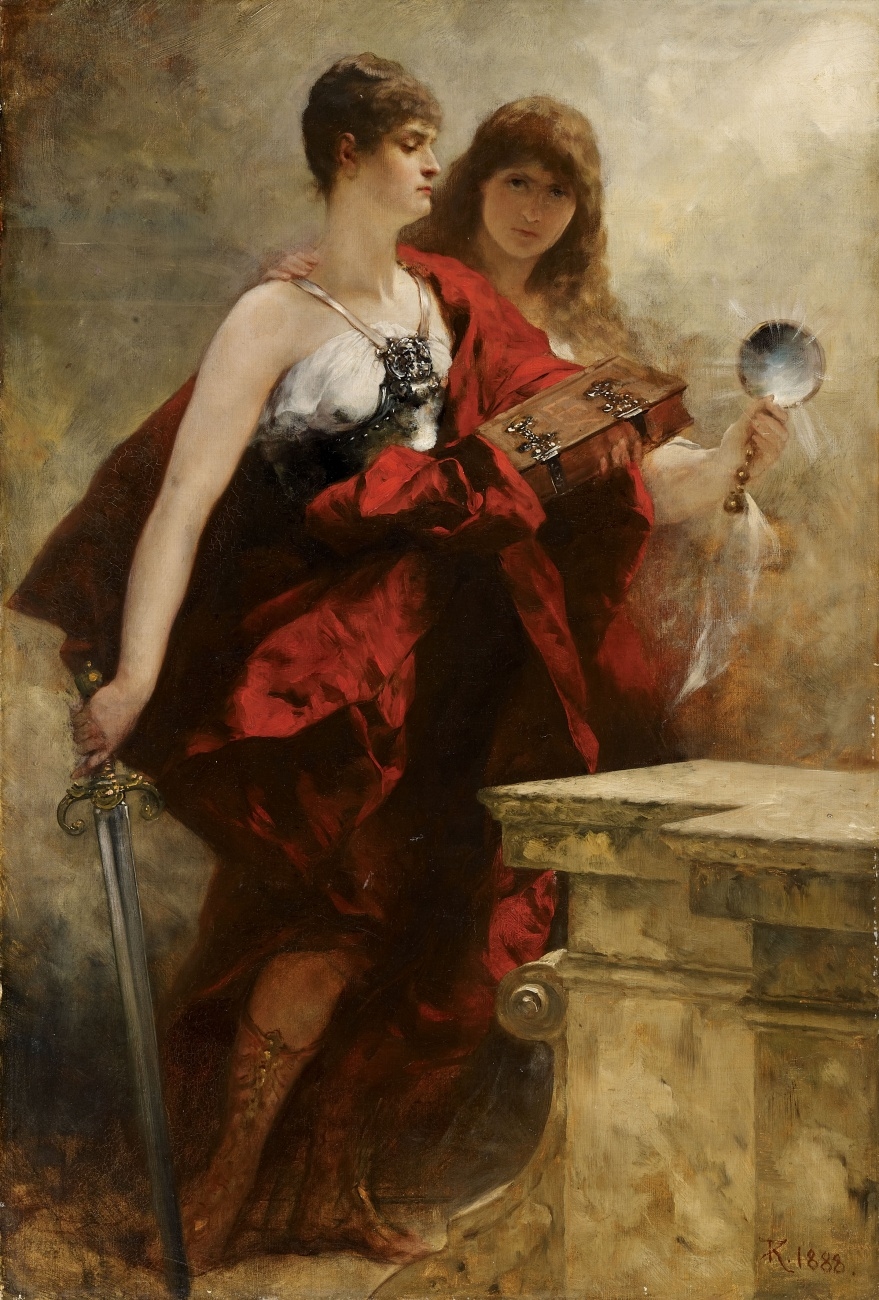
Ferdinand von Keller Studie zur Apotheose Kaiser Wilhelms I 1888